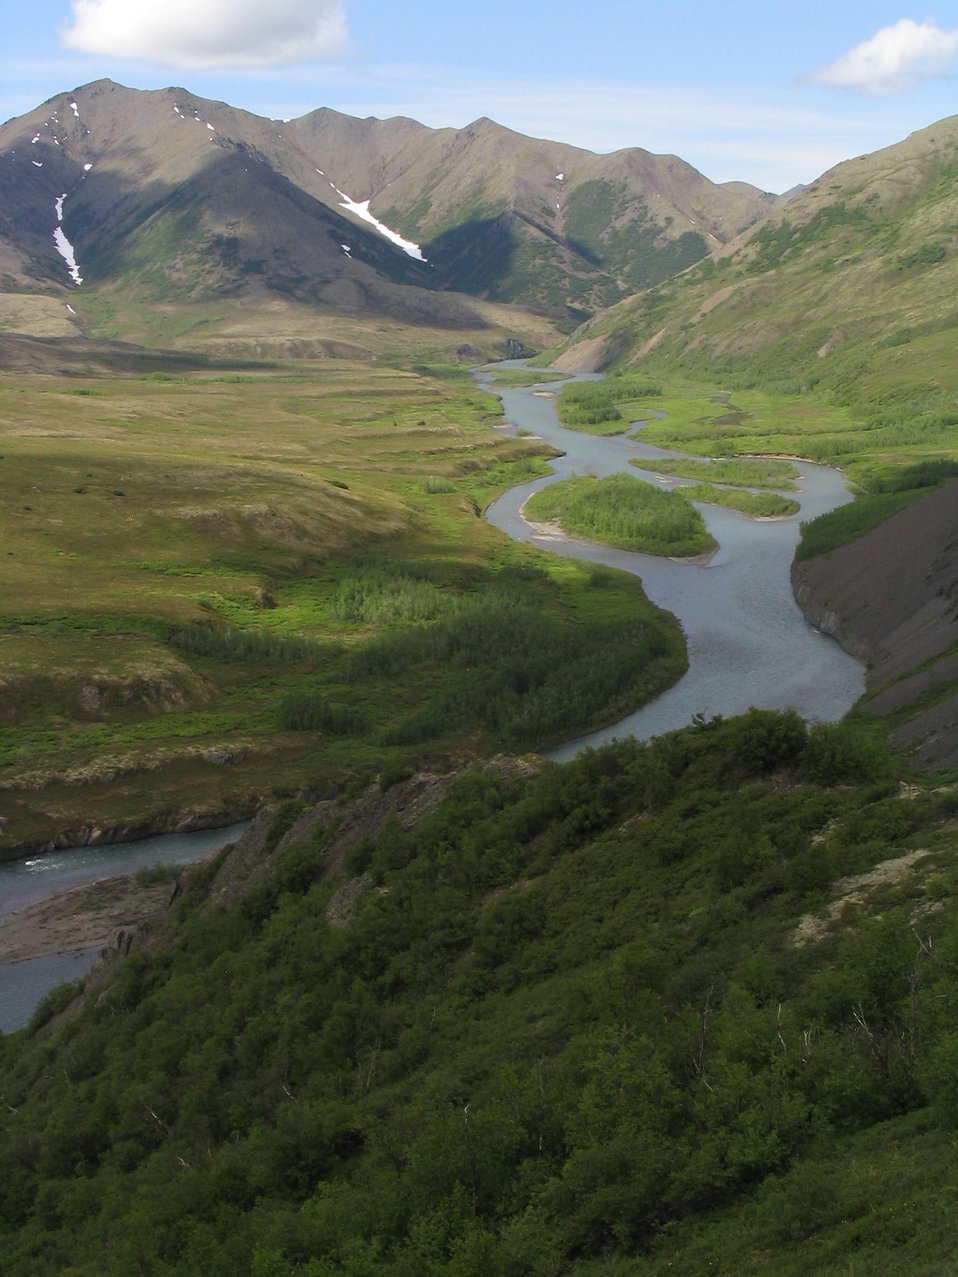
Gyrfalcon habitat

In 2004 a multi-year research project was initiated investigating Gyrfalcons within the YDNWR.

USFWS Yukon Delta NWR